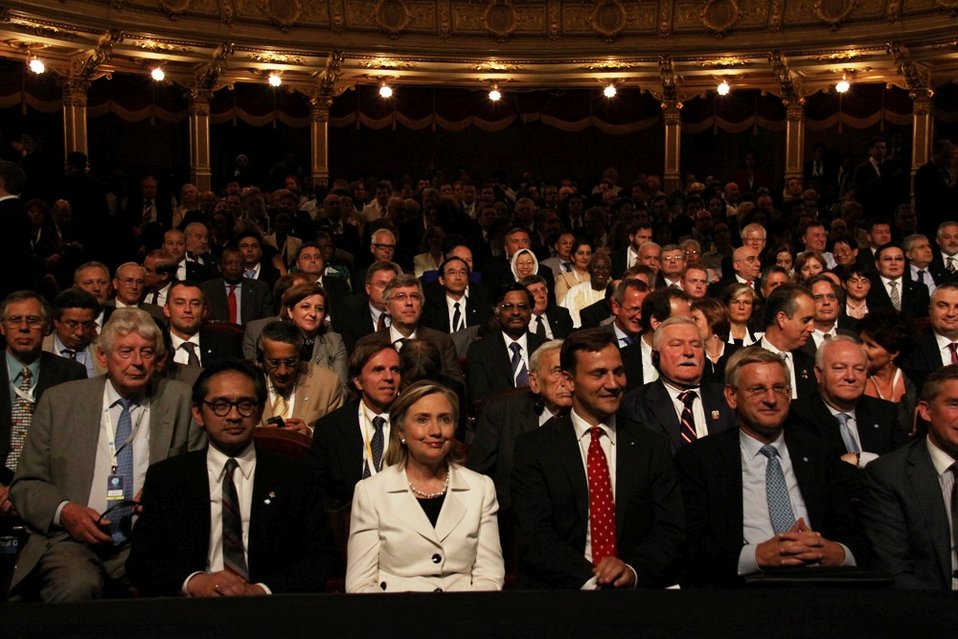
Secretary Clinton Sits With Community of Democracies Participants

U.S. Secretary of State Hillary Rodham Clinton sits in the audience with participants of the Community of Democracies conference at the Slowacki Theater in Krakow, Poland, on July 3, 2010.